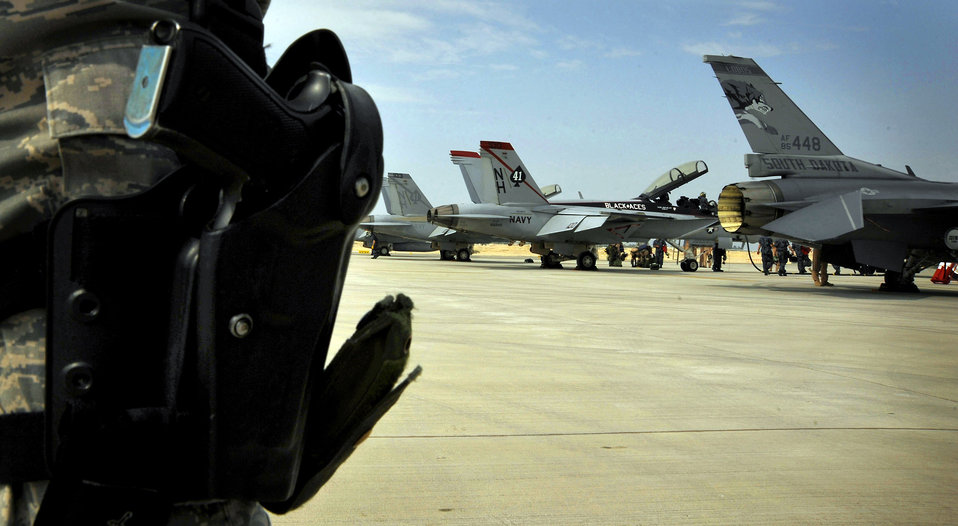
U.S. Supports Bahrain's 1st Air Show

A security forces Airman stands guard while Airmen and Sailors perform maintenance on Air Force and Navy aircraft Jan. 22, 2010, at Bahrain's International Airshow.